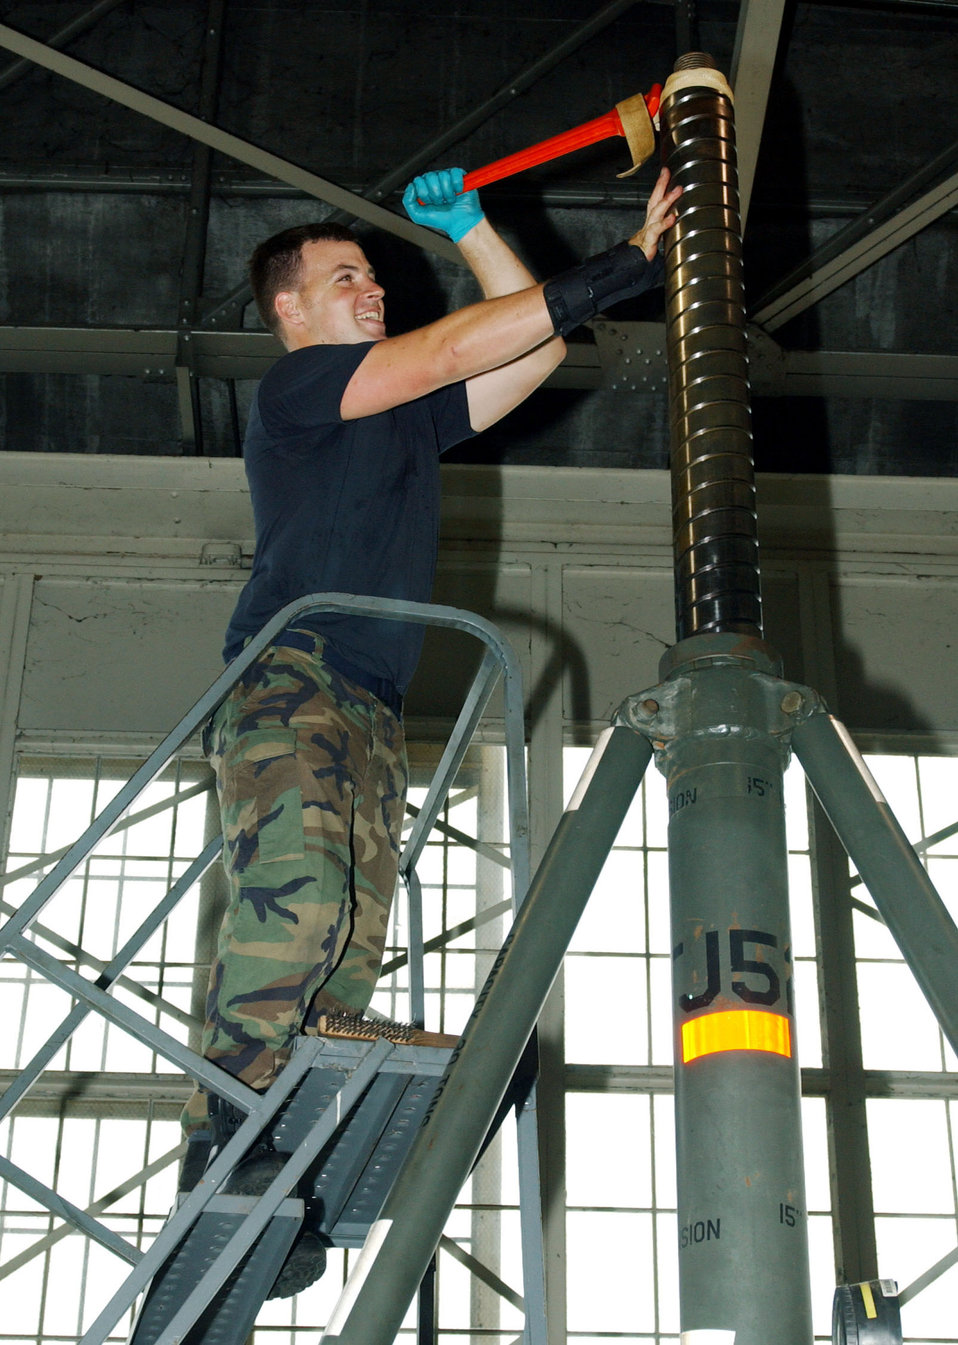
Lube it up

BARKSDALE AIR FORCE BASE, La. -- Senior Airman David Kraus lubricates the ram on a tripod jack during the nuclear operational readiness exercise here May 11. Airman Kraus is assigned to the 2nd Maintenance Squadron